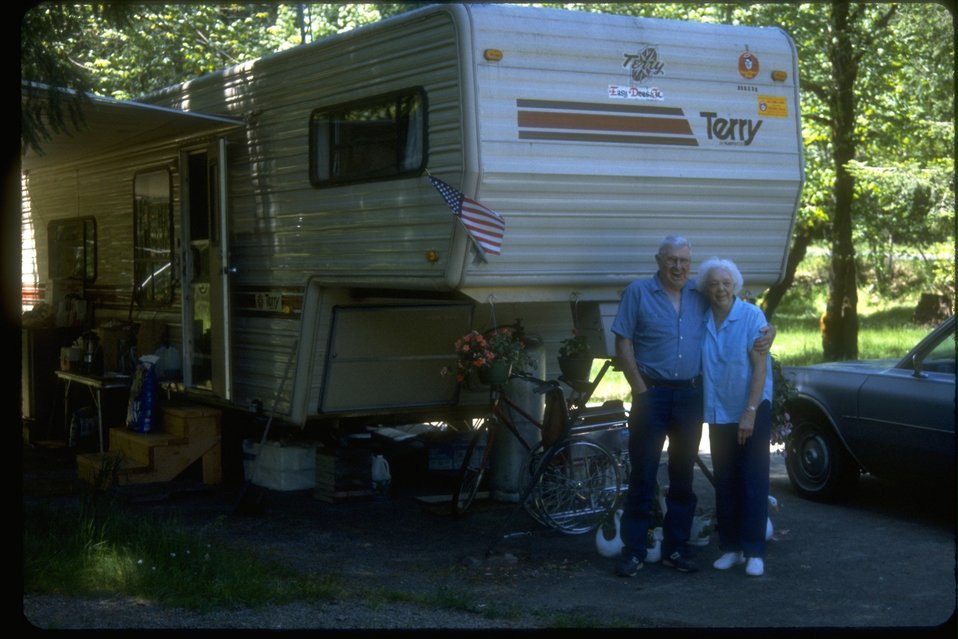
Volunteer campground hosts standing in front of their trailer.